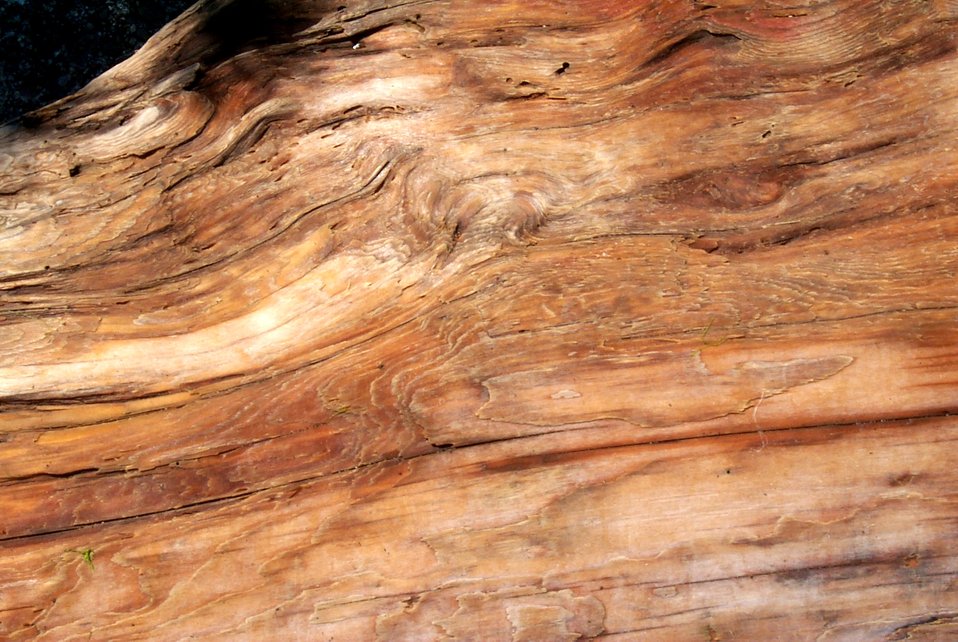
Driftwood trunk of a cedar tree.